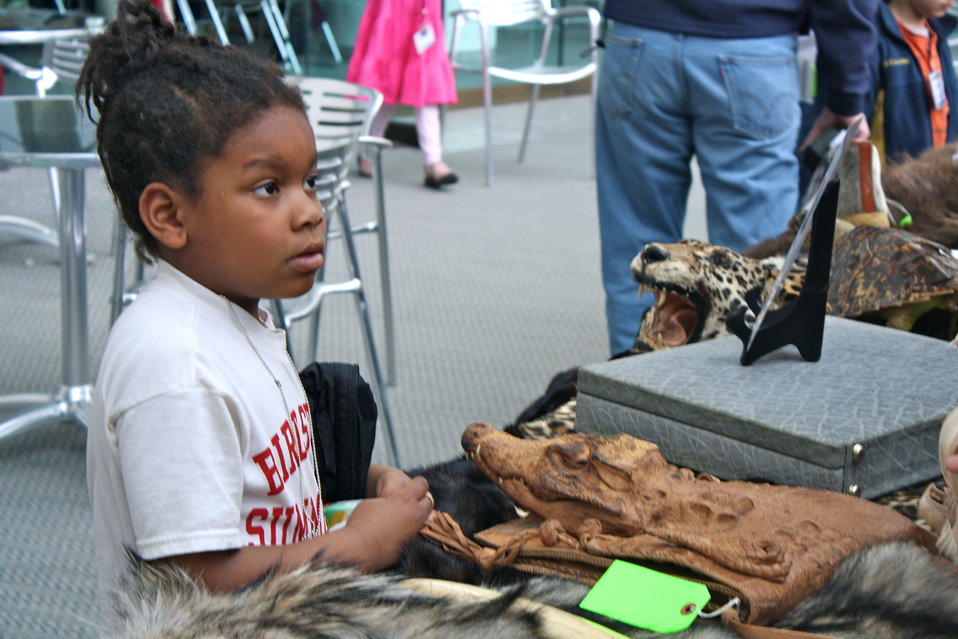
Girl at Exhibit